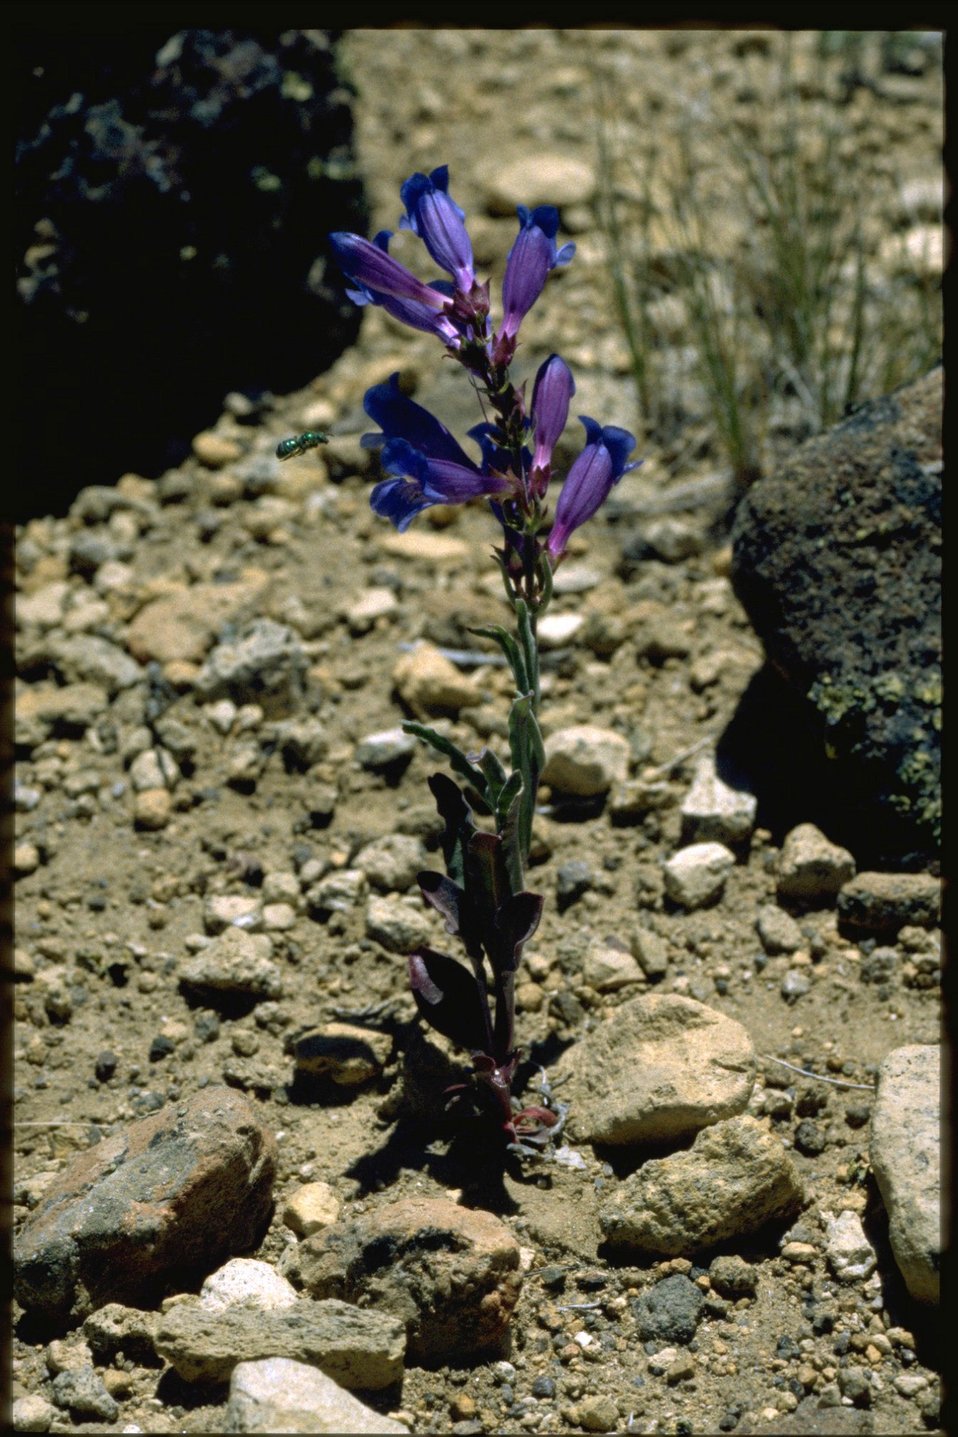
Medium shot of penstemon wildflowers.